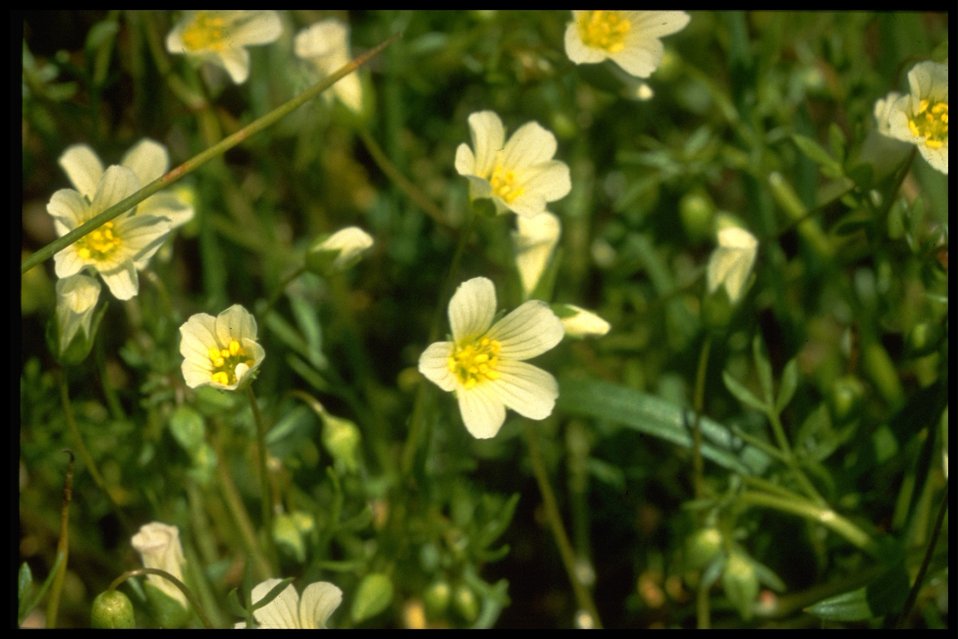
Medium shot of slender meadow foam (Limnanthes gracilis var. gracilis).